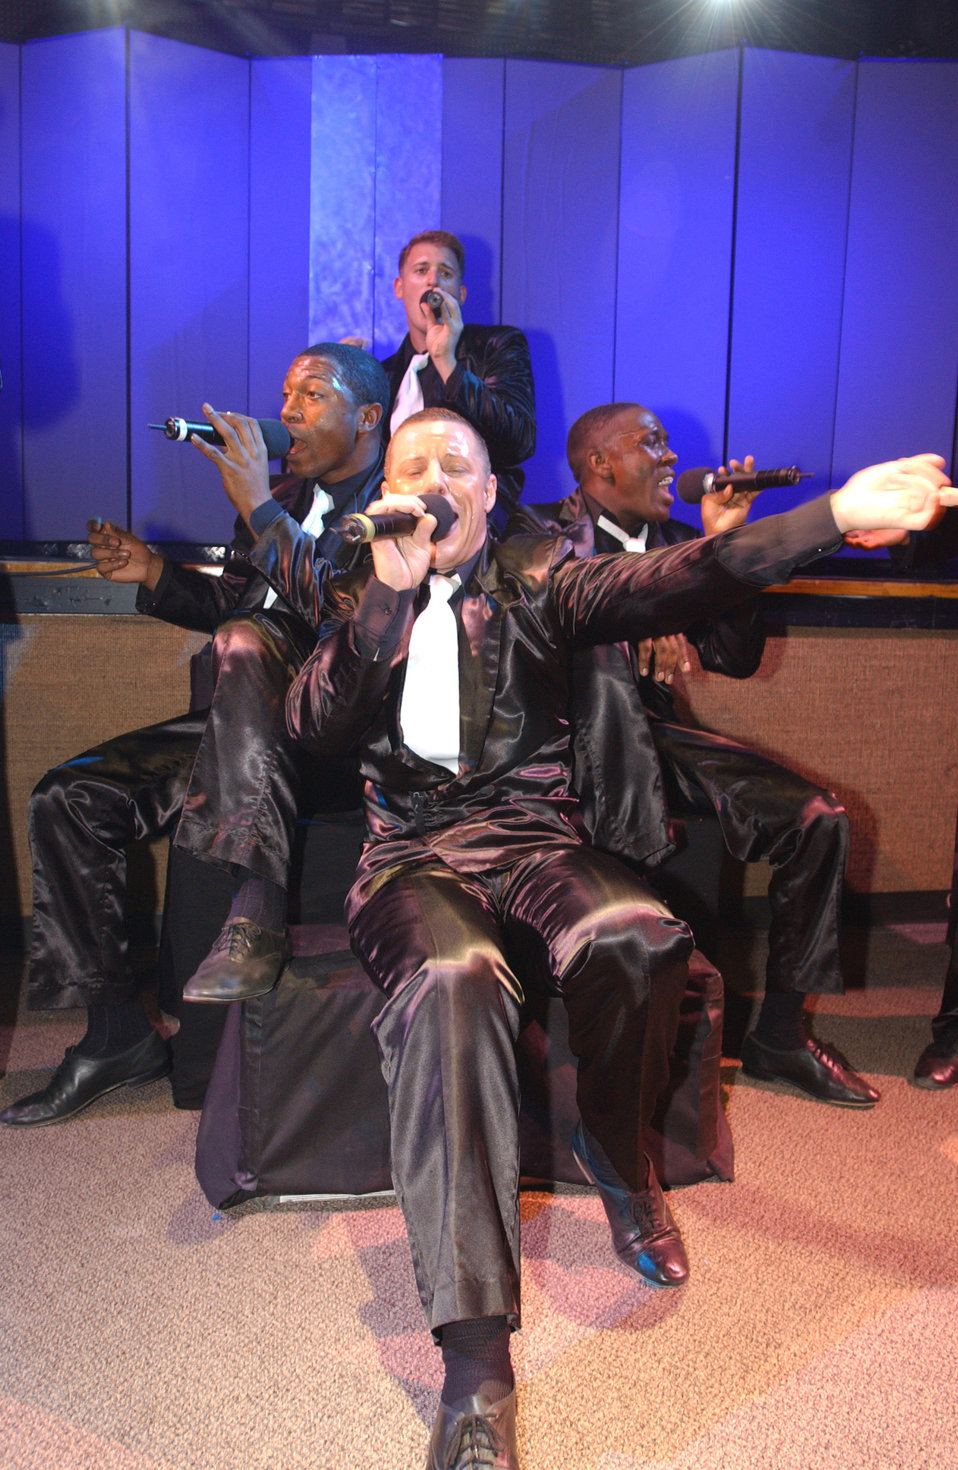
Tops in Blue

ELMENDORF AIR FORCE BASE, Alaska -- Tops In Blue members sing a cappella during their concert here recently. The members are (clockwise from the top) 1st Lt. Matthew Fuller, Senior Airman Christian Martinez, Staff Sgt. Jamie Montgomery and Senior Airman Antonio Dandridge.